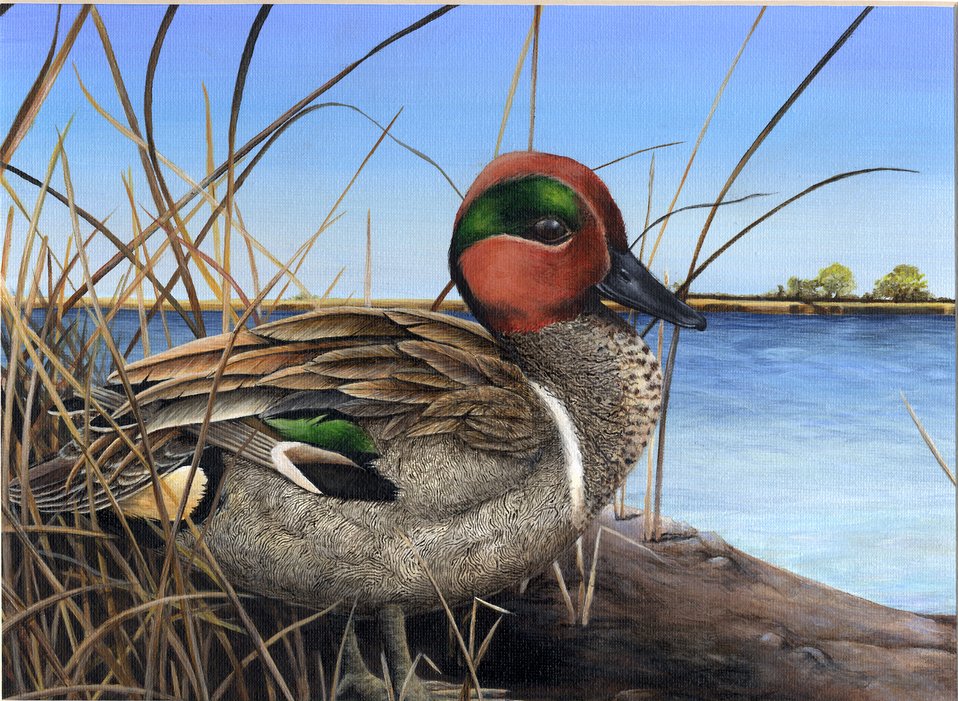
Nebraska

2012 Jr Duck Stamp Program
State Best of Show
Nebraska